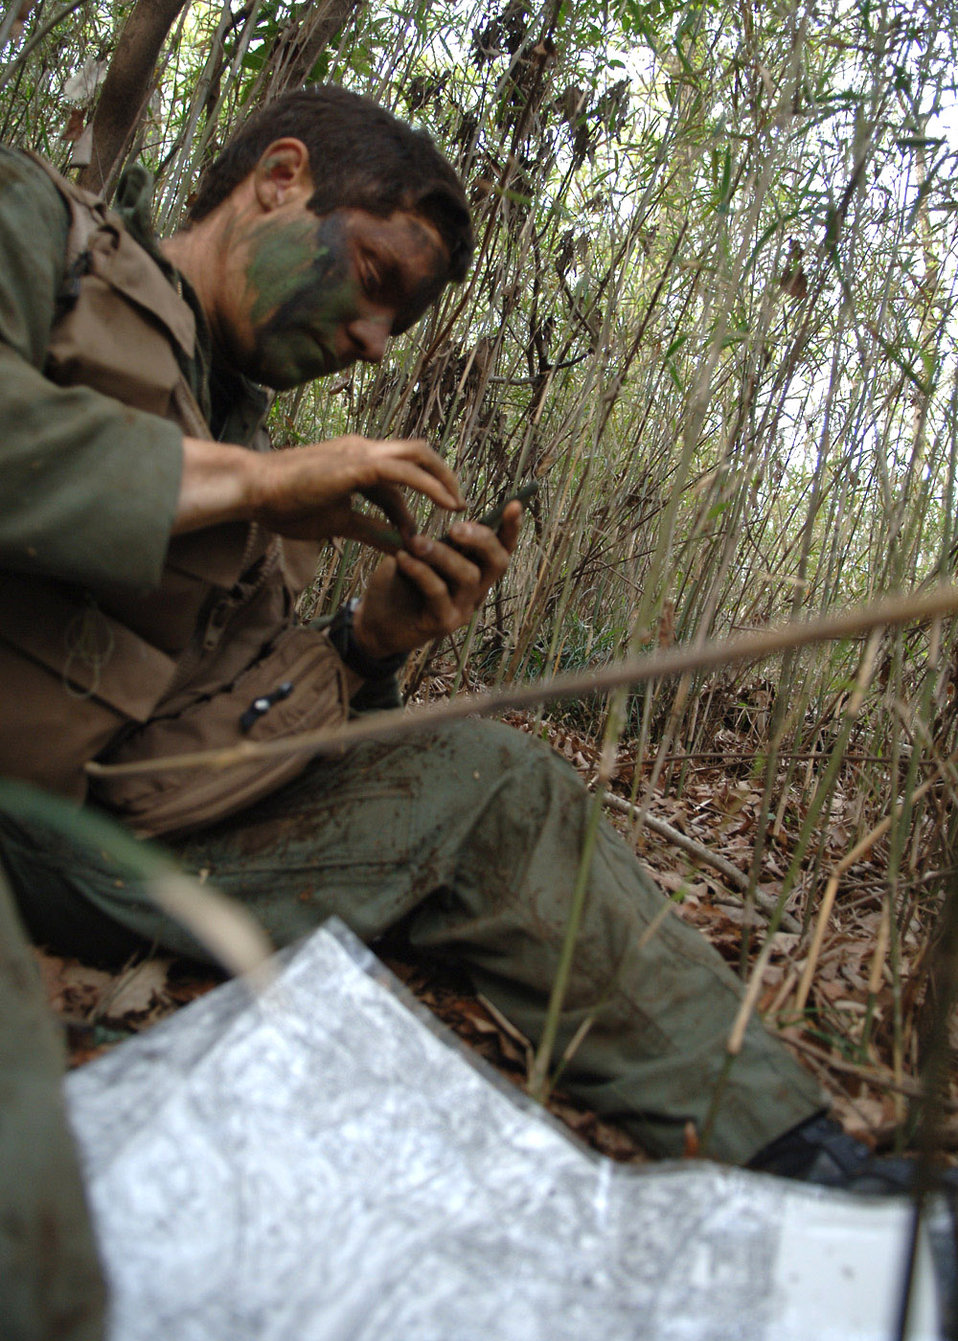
Training to survive

Capt. Pierre Alvarado practices survival techniques used if lost in hostile territory April 10 at the Tama Hills Recreation Center near Yokota Air Base, Japan. Captain Alvarado is from the 36th Airlift Squadron.